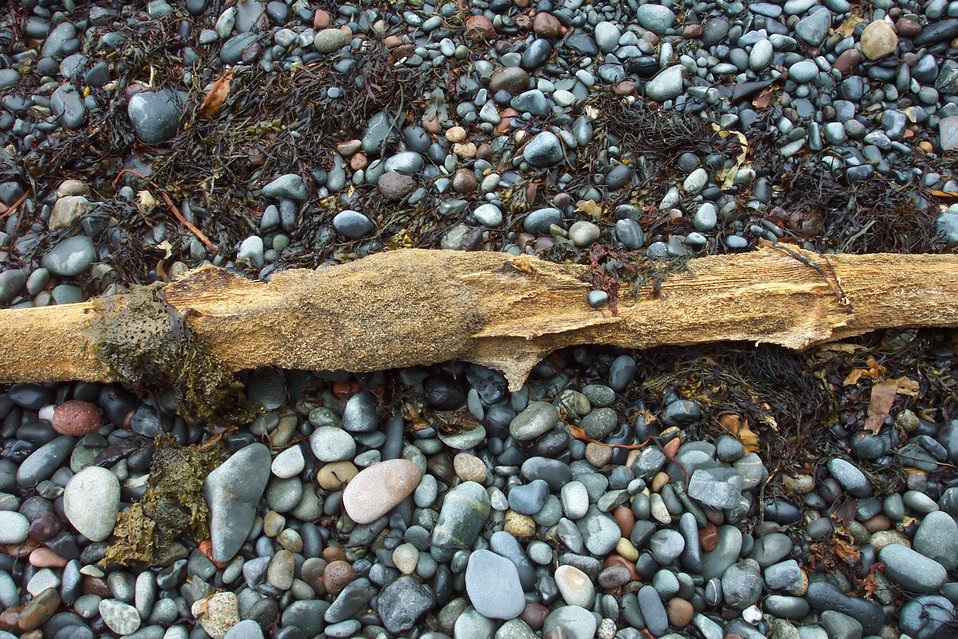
A teredo-bored flotsam surrounded by kelp on the cobble beach.